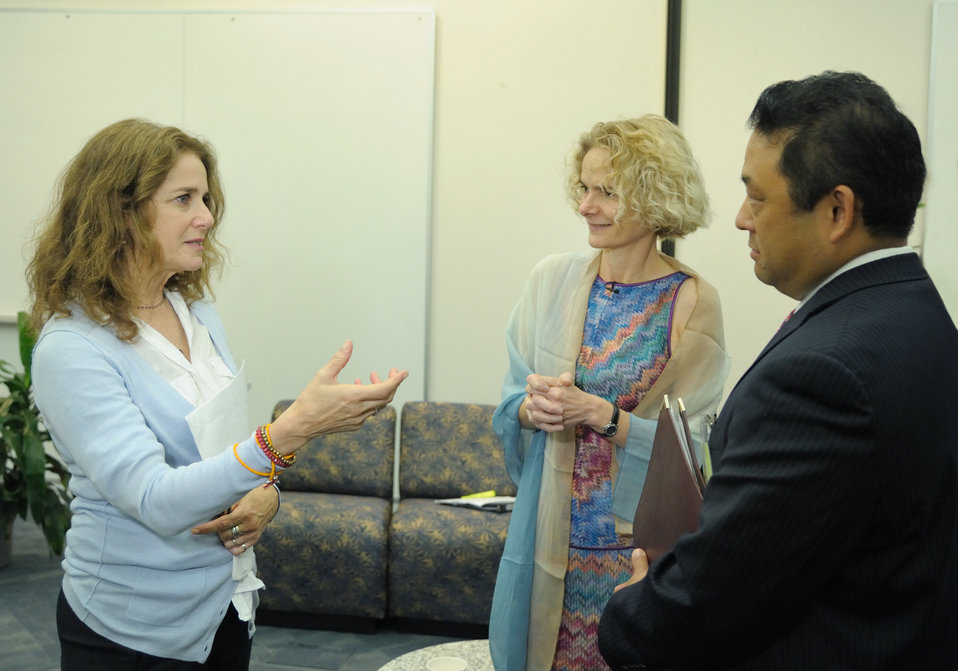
APP5 - NIH Aug 2011

Actress Debra Winger, Dr. Nora Volkow (NIDA Director) and David Mineta (Deputy Director of Demand Reduction, White House Office of National Drug Control Policy) speak prior to NIDA’s Addiction Performance Project, held Aug 5, 2011 on the NIH Campus